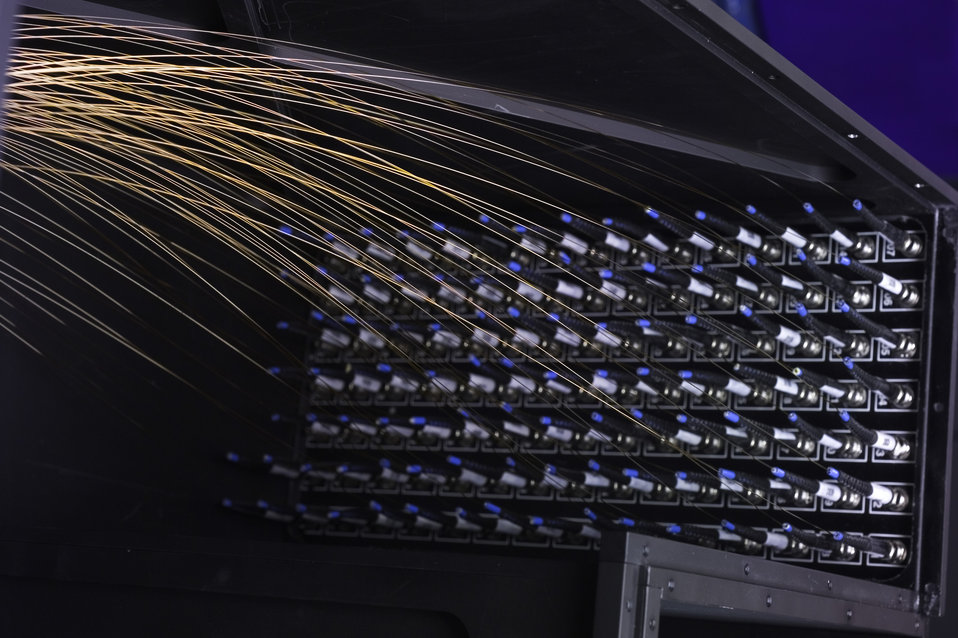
Fiber optic connector panel for the new Omega Energy Diagnostic System.